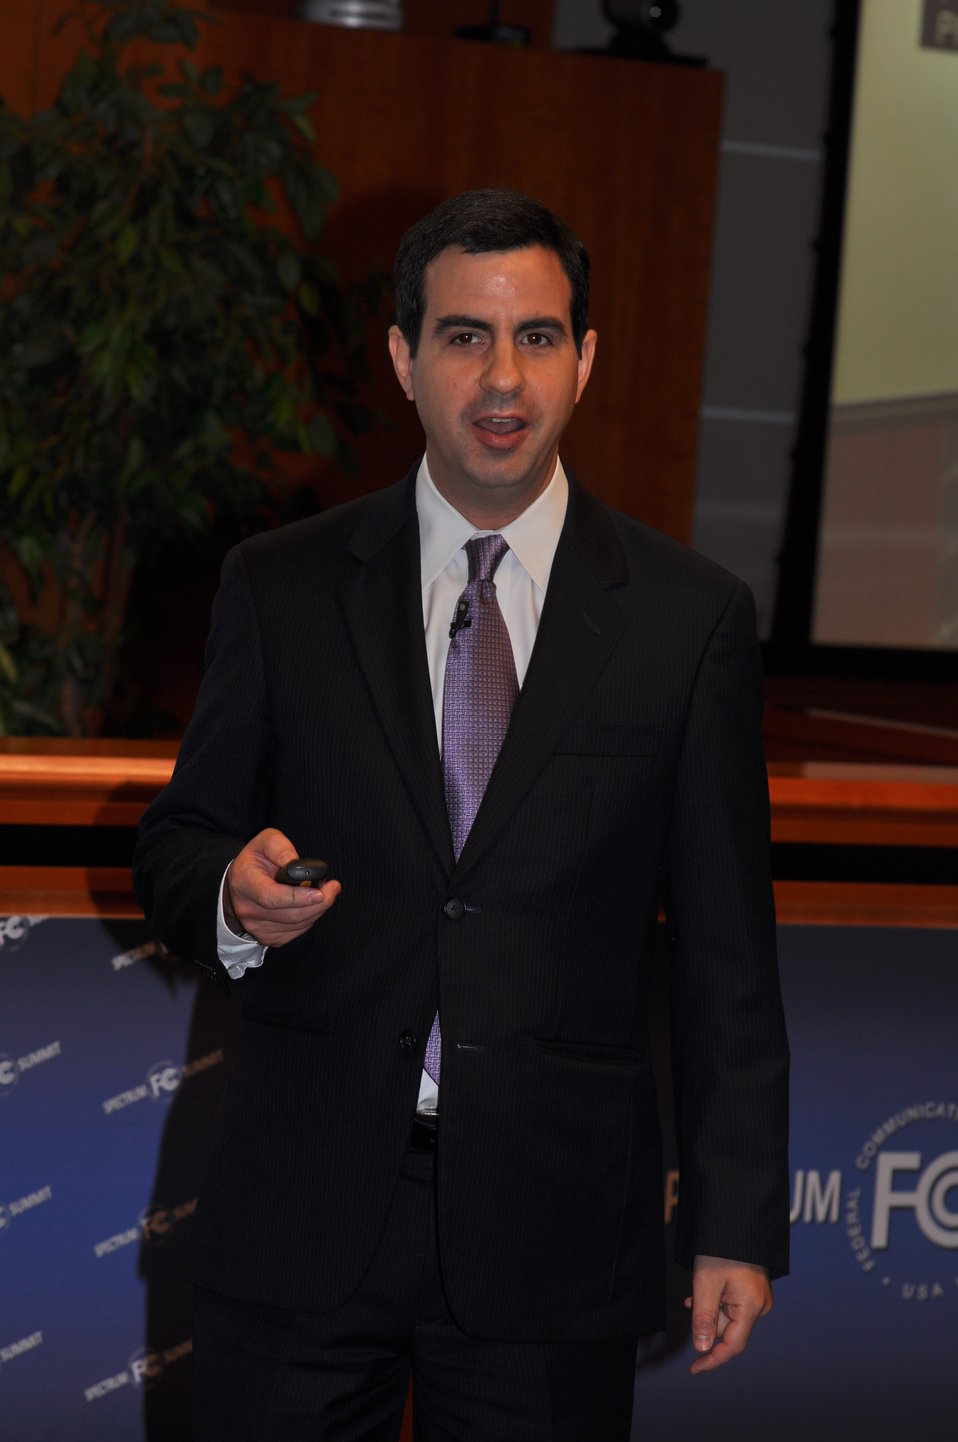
Spectrum Summit